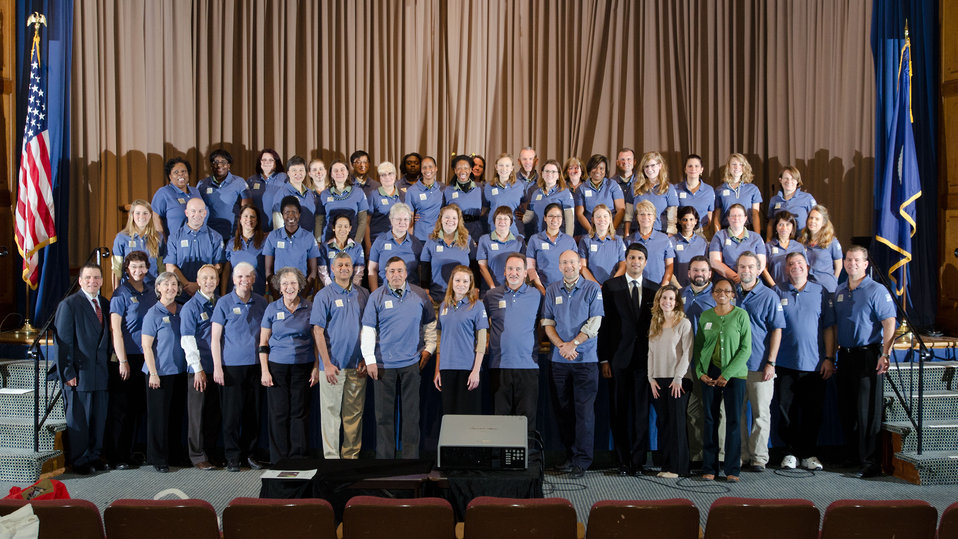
Graduation day of the 2011 U.S. Department of Agriculture (USDA) Executive Master Gardeners, on Tuesday, November 8, 2011 in Washington, DC. During the past six-weeks, students contributed 40-hours of volunteer time, completed studies and testing to receive their certificates today as an Executive Master Gardener. Many of the sessions occurred before work hours, during lunchtime or at community garden project sites such as Powell Middle School. USDA challenges its employees to establish People's Gardens at USDA facilities worldwide or in community gardens. People's Gardens vary in size and type, but all have a common purpose - to help the community and the environment. To learn about the People’s Garden Initiative visit www.usda.gov/wps/portal/usda/usdahome?contentid=peoples g....